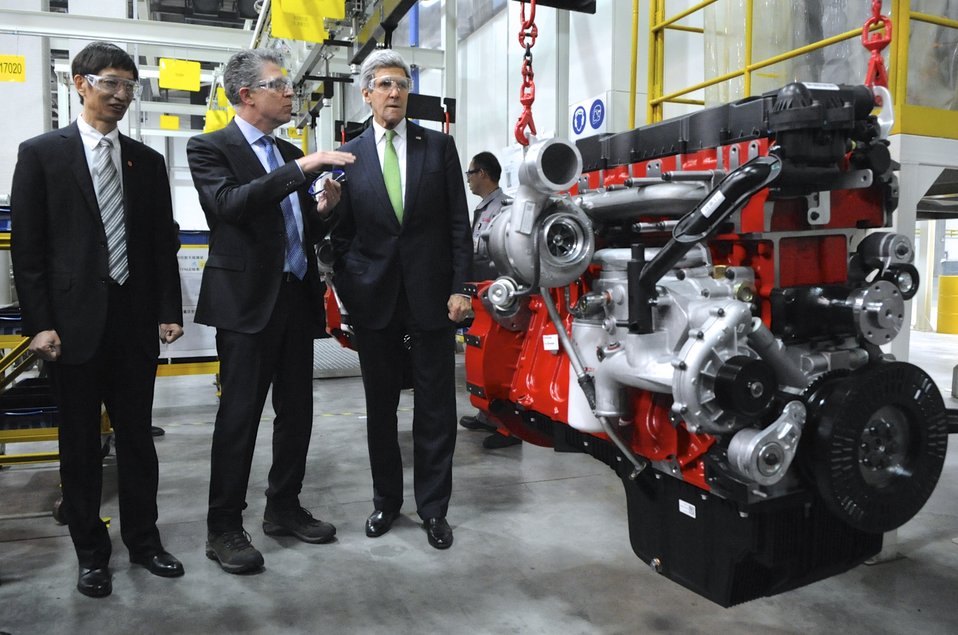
Secretary Kerry Tours Chinese Automotive Factory

Cummins Vice President Steve Chapman shows U.S. Secretary of State John Kerry an assembled clean-diesel engine while touring the Cummins-Foton Joint Venture Plant in Beijing, China, on Feb. 15, 2014.